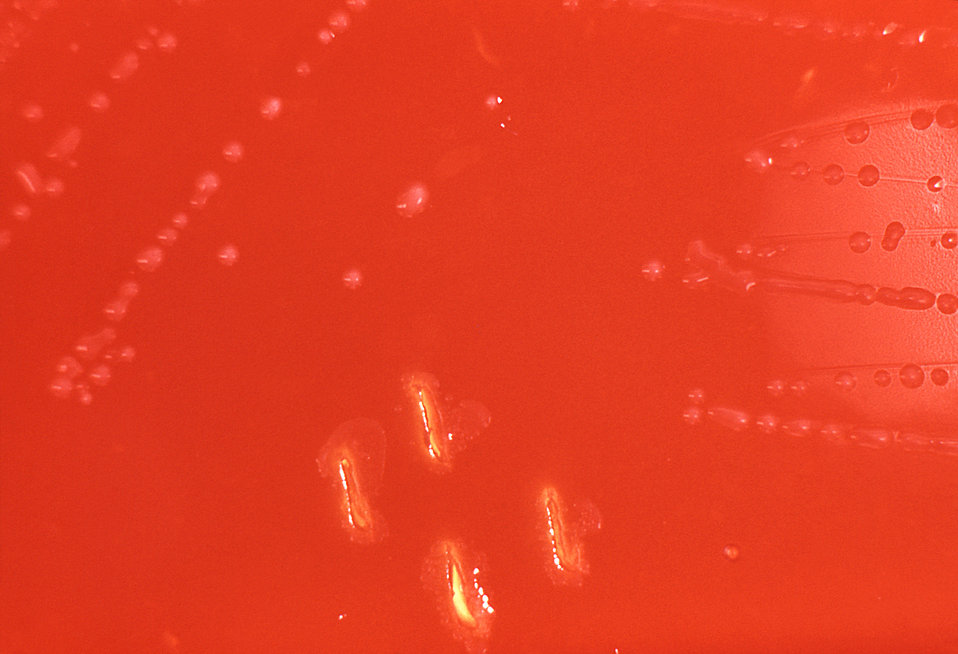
This 1977 photograph (no magnification) depicted a Petri dish filled with trypticase soy agar medium containing 5% defibrinated sheep's blood, i.e., blood agar plate (BAP) that had been inoculated by streaking and stabbing the surface of the BAP with a non-hemolytic group A Streptococcus pyogenes (GAS) bacteria. The BAP was then incubated in a carbon dioxide enriched atmosphere at 35oC for 24 hours, and grew bacterial surface colonies with no characteristic color changes surrounding each colony, or in the stabbed areas. Under examination, no red blood cells in the blood agar medium had been altered, or "hemolyzed", indicating that these bacteria were indeed non-hemolytic in nature.Infection with non-hemolytic GAS can result in a range of symptoms identical to that of typical beta-hemolytic GAS:- No illness- Mild illness (strep throat or a skin infection such as impetigo)- Severe illness (necrotizing faciitis, streptococcal toxic shock syndrome)